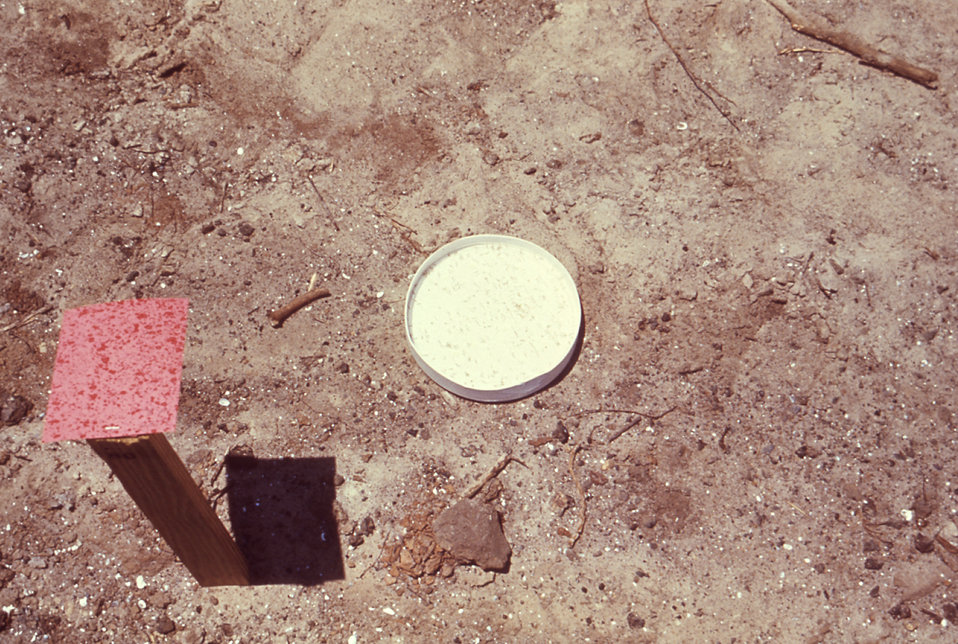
This 1981 photograph depicted a dye card atop a wooden stake, along with numbers of collected mosquito larvae floating in an aqueous solution inside the lid of a shipping container, which was shipped to a laboratory to be counted, and classified for bioassay purposes.